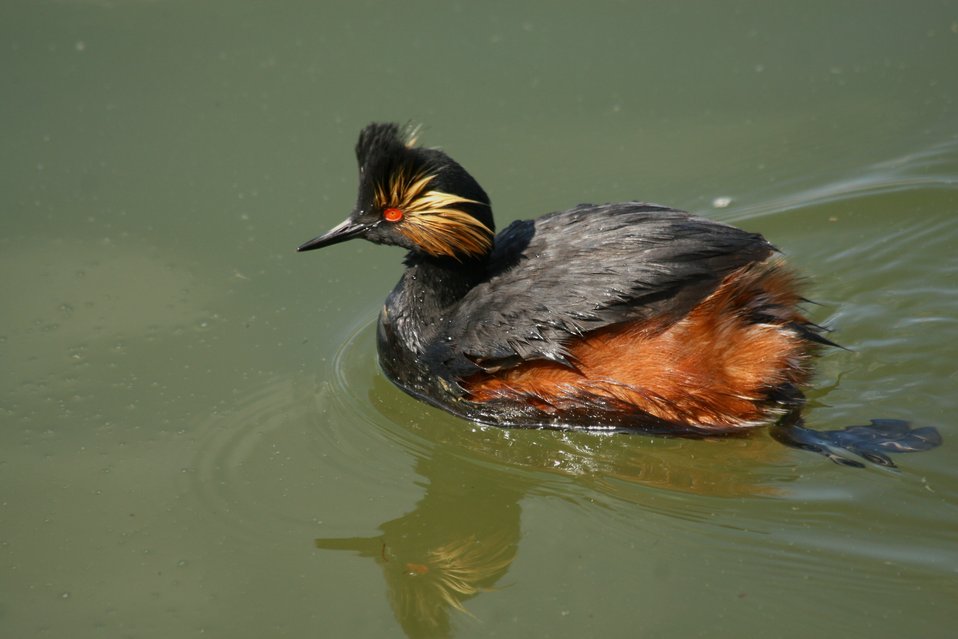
Eared Grebe Out for a Swim

The lands of the refuge were established to protect and provide habitat for migratory birds that cross State lines and international borders and are by law a Federal trust responsibility.

The refuge is of great value to waterfowl and shorebirds, as well as other migrating water-dependent bird species, because of the diversity of wetland and upland habitats that provide for the diverse life cycle needs of these species.